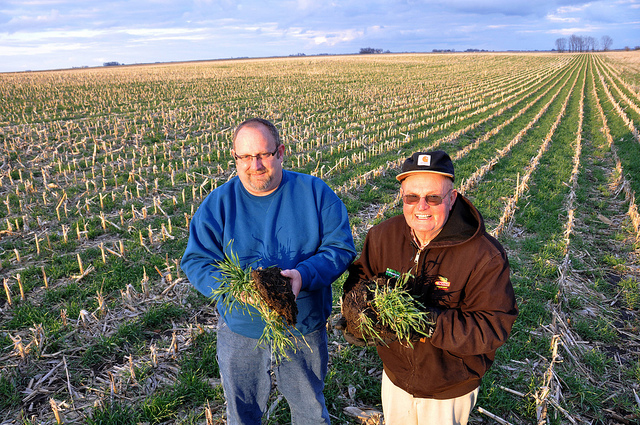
Cover Crop1

Todd and Arliss Nielsen inspect their ryegrass cover crop in Wright County, Iowa.